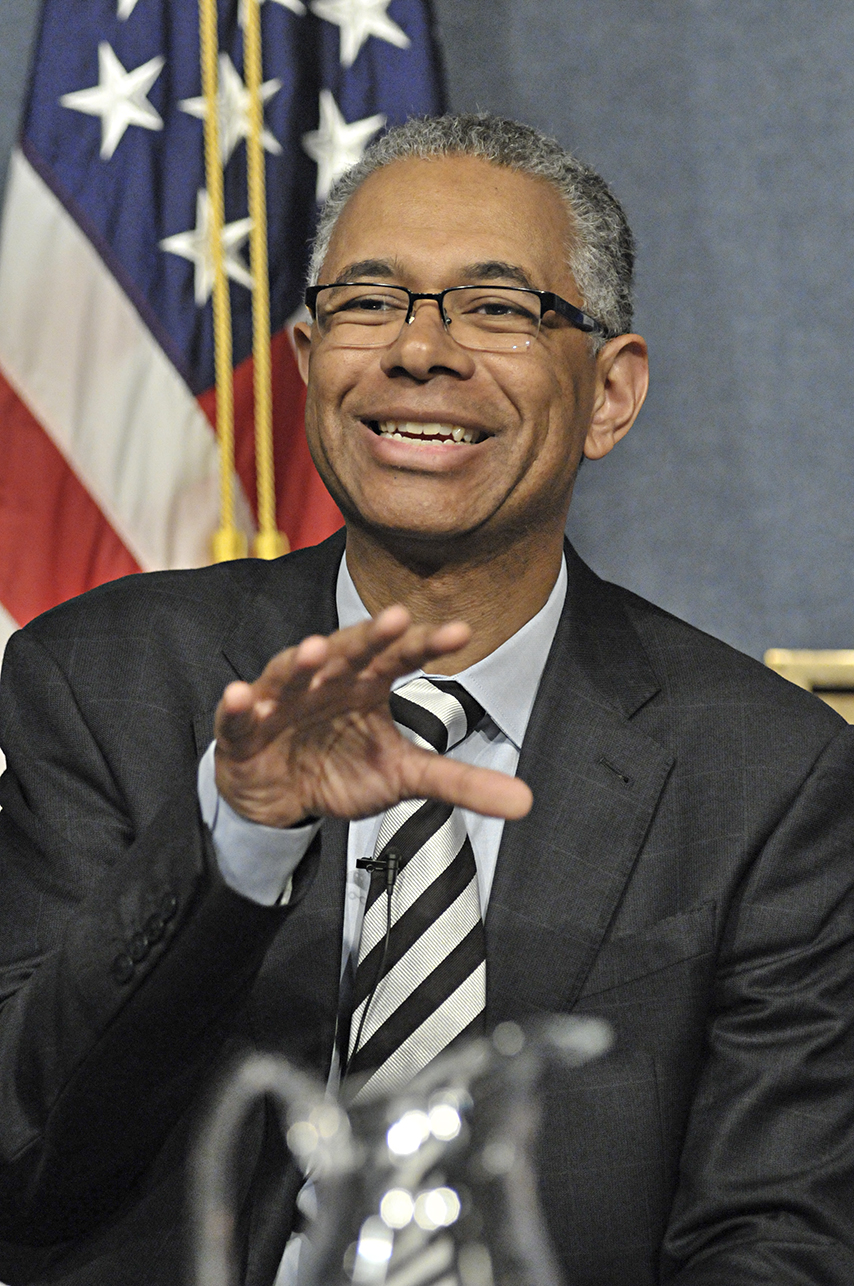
Panel: Increasing Minority Participation in the Energy Sector

Opportunities and Solutions panel at the Minorities in Energy Initiative, September 24, 2013.